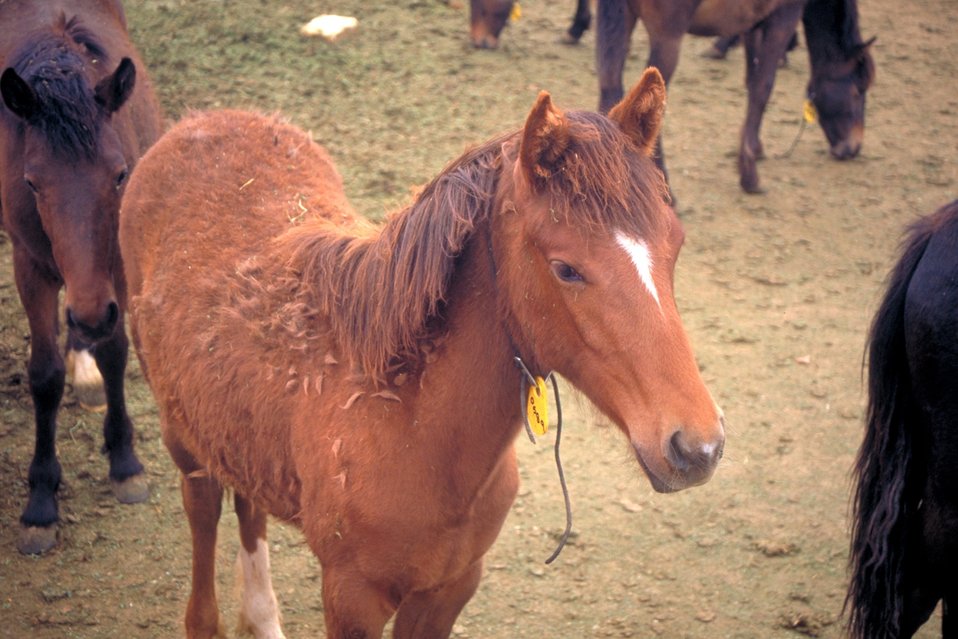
Holding pen near Vernal, Utah.